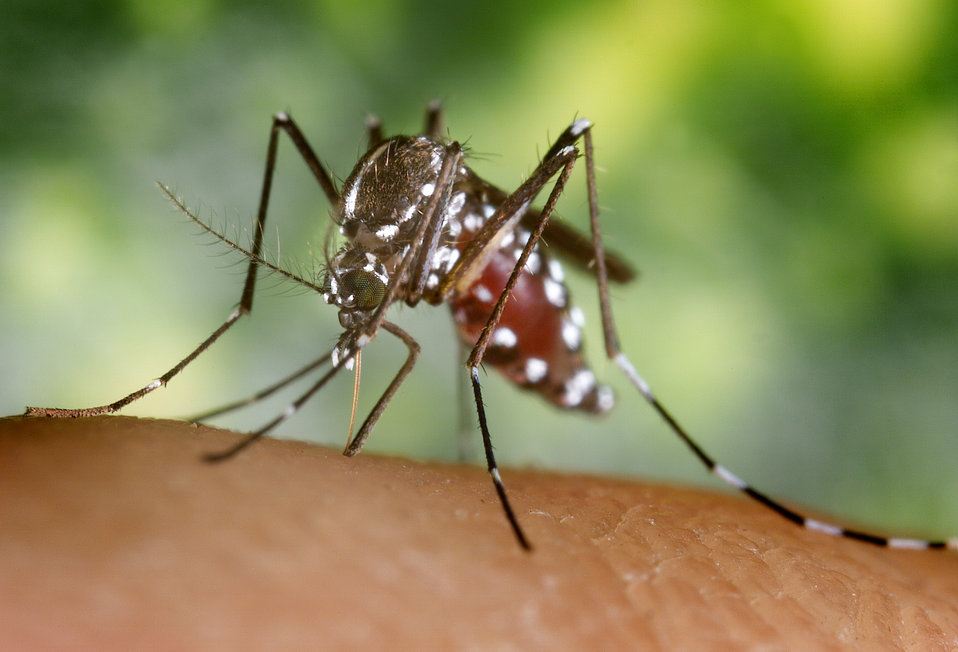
A blood-engorged female Aedes albopictus mosquito feeding on a human host.